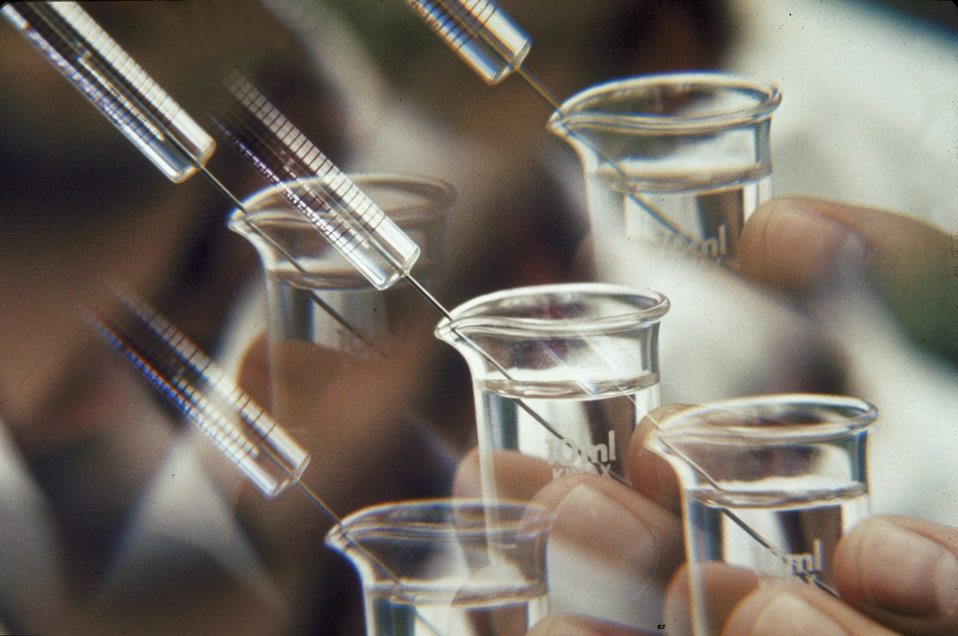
The U.S. Department of Agriculture (USDA) announced on January 26, 1998 that it was going to require meat and poultry processing plants to have a science-based Hazard Analysis and Critical Control Points (HACCP) food inspection system put into place. HACCP is a food production, storage, and distribution monitoring system for identification and control of associated health hazards using definitive scientific tests. Its purpose is to prevent contamination of food products during processing.